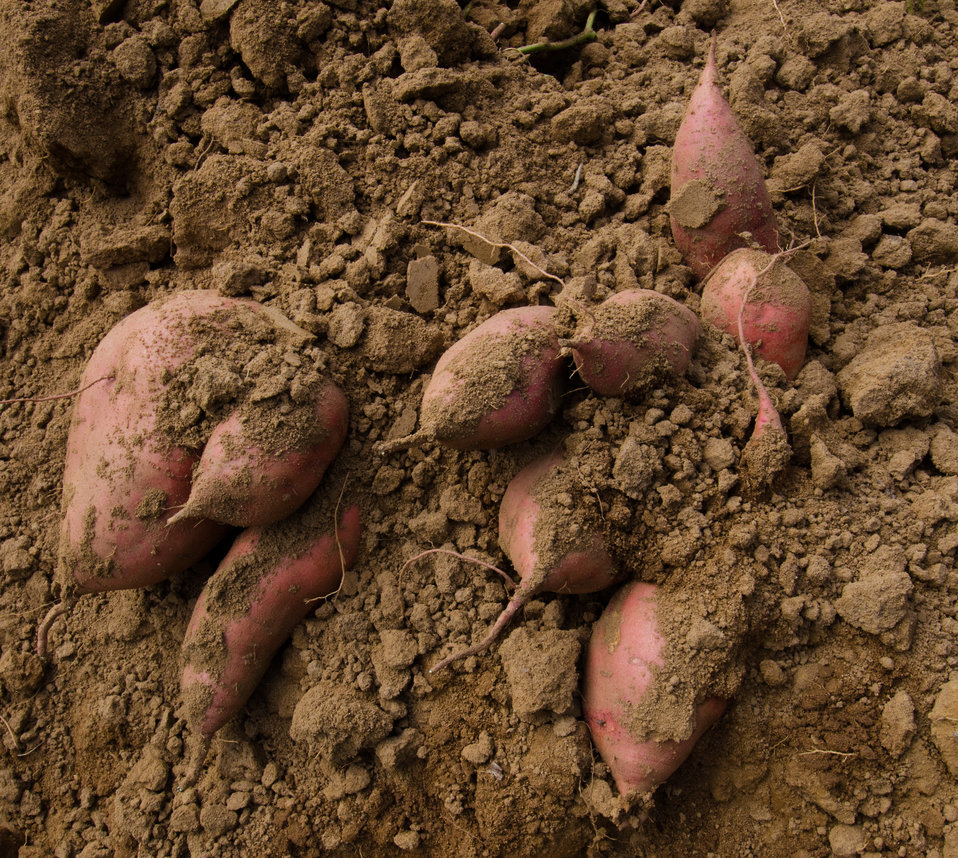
Harvested hand picked large sweet potatoes, at Kirby Farms in Mechanicsville, VA on Friday, Sept. 20, 2013. 200 acres of the farm are devoted to eggplant, spinach, beets, tomato, jalapeno peppers, melons and a variety of greens. Soybeans and small grain are grown on the remaining 300 acres. Using rotational crop practices allows Kirby Farms to double and triple crop yields. Wholesalers, who buy from this farm, sell the produce to major supermarkets in the Mid-Atlantic region, from North Carolina to Maryland. Restaurants in the local area prepare and serve the local bought produce to patrons in the Richmond, VA metropolitan area.